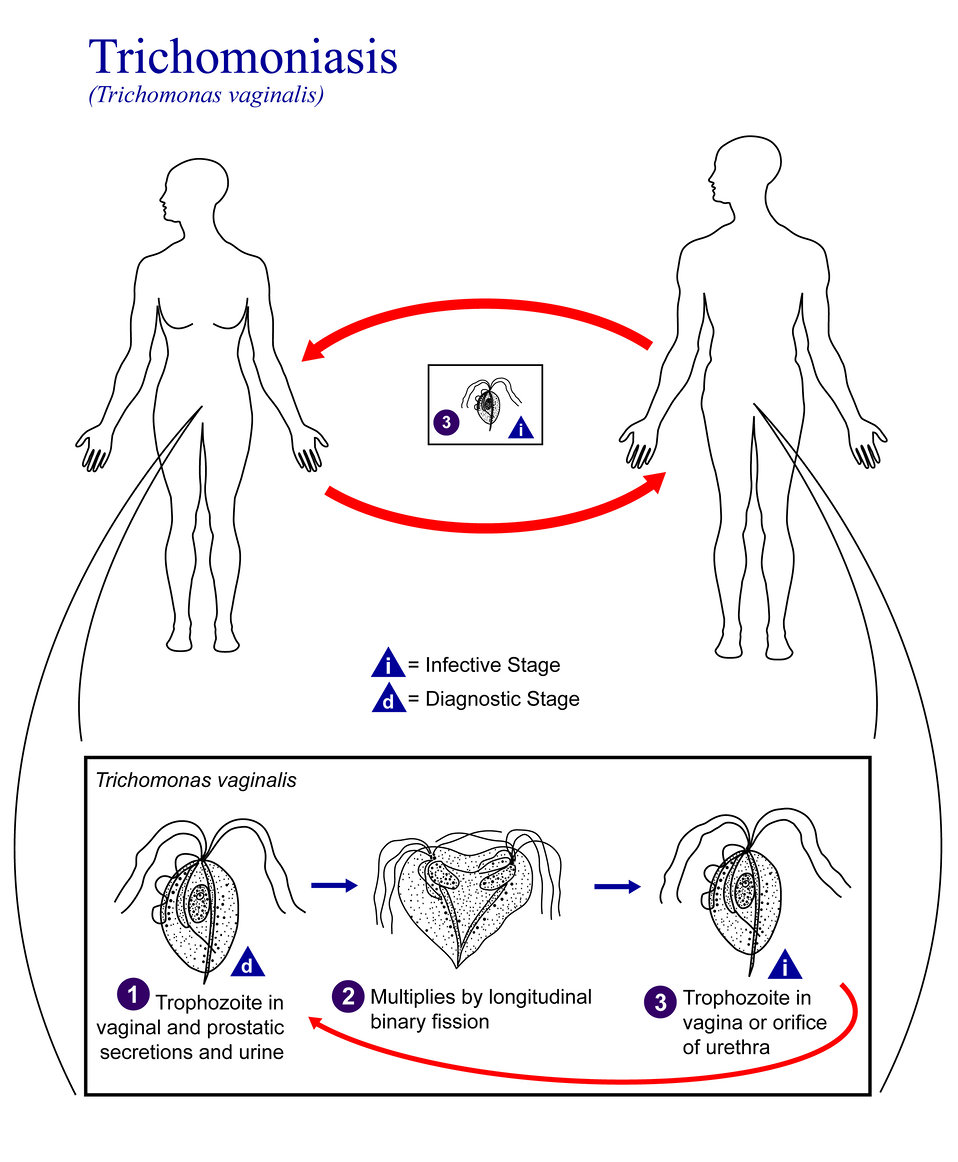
This is an illustration of the life cycle of Trichomonas vaginalis, the causal agent of Trichomoniasis.